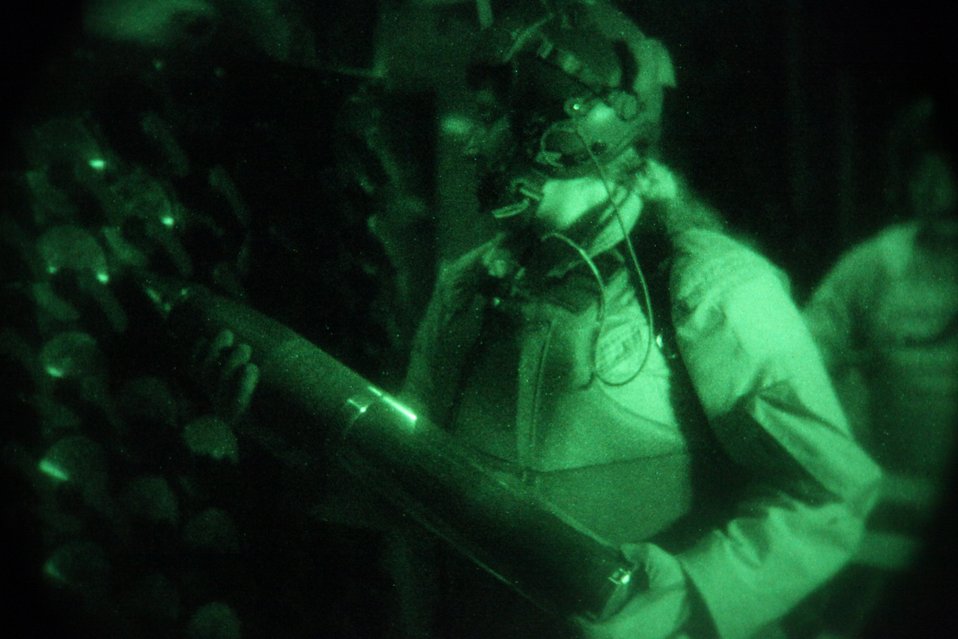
AC-130 crew provides air support

A gunner aboard an AC-130 Gunship loads a 105 mm round March 3, 2010, while supporting ground troops conducting operations in Afghanistan's Parwan province.